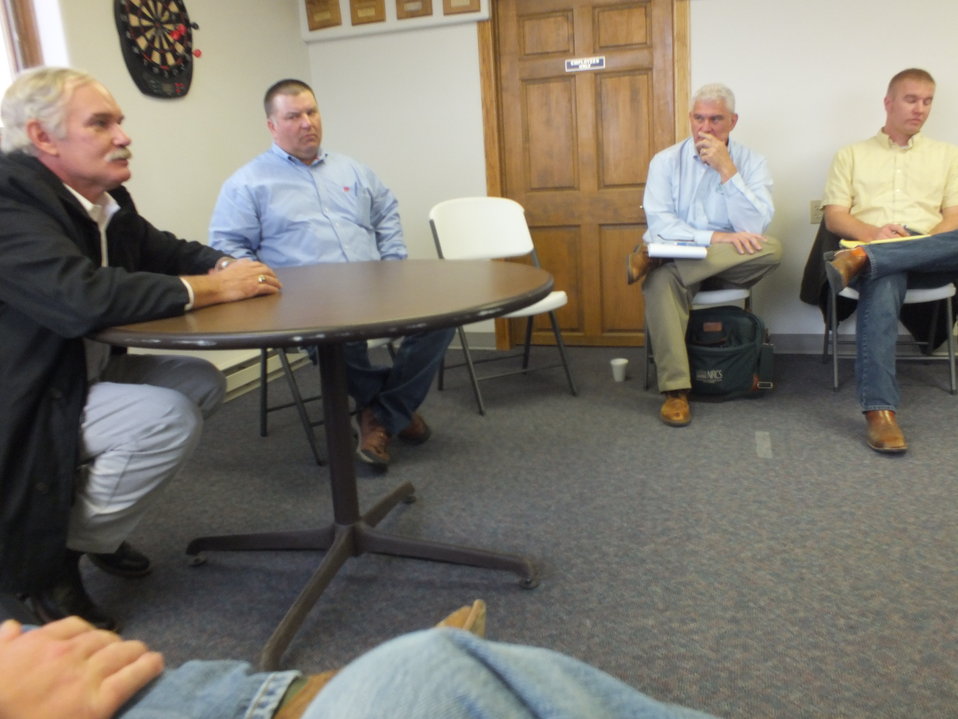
Agriculture Under Secretary for Farm and Foreign Agricultural Services (FFAS) Michael Scuse, Farm Service Agency (FSA) representatives, Natural Resources Conservation Service (NRCS) County, and State officials meet with producers after they viewed the burial pit of cattle that perished in the Atlas Blizzard. The burial pit was approximately 20-25 feet wide and 100 feet long. There were nearly 200 carcasses already in the pit, with many more to come as soil wetness conditions improve in areas that are still inaccessible by conventional methods.